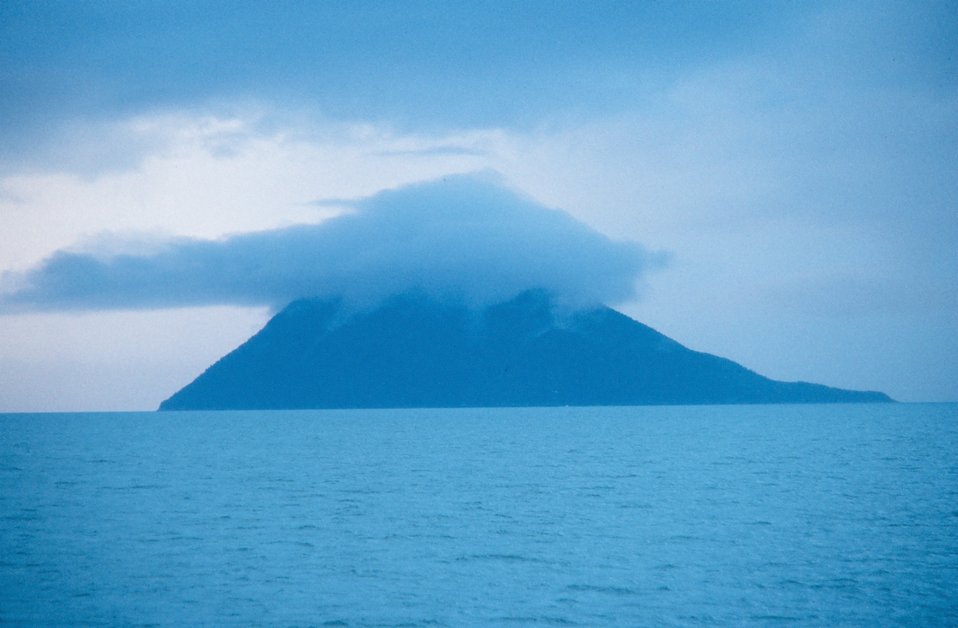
Passing Kayak Island - Cape St. Elias